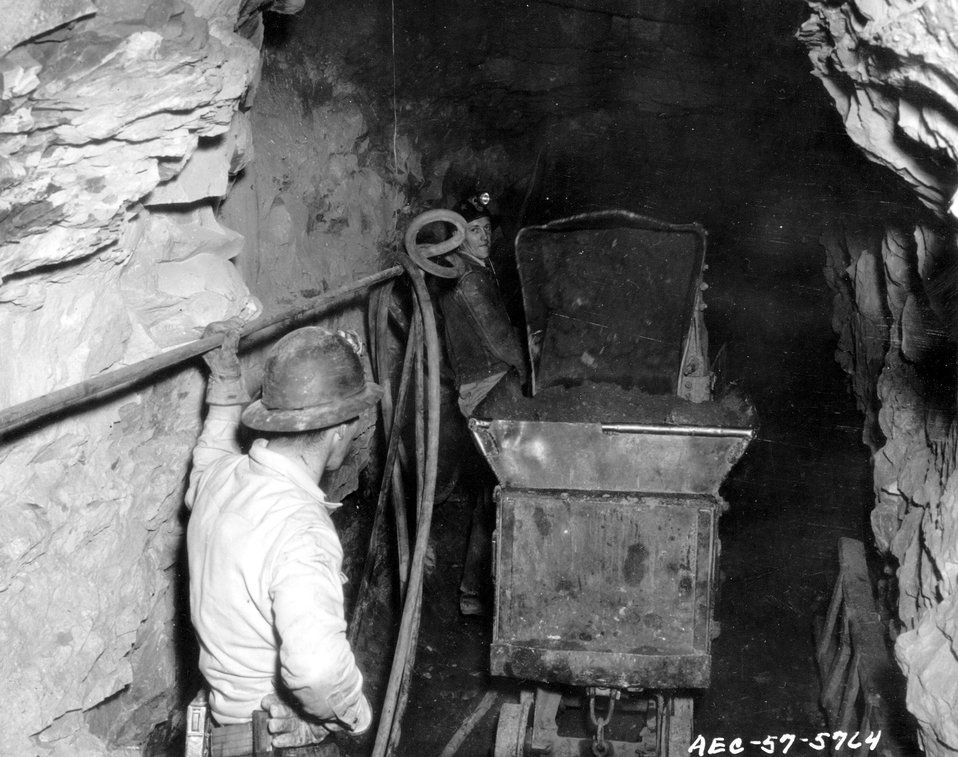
Loading car in uranium mine. Scoop dumping ore into car is part of an overhead, mechanical loader (not visible) operated on compressed air brought into the mine by the pipe at the left. c. 1957